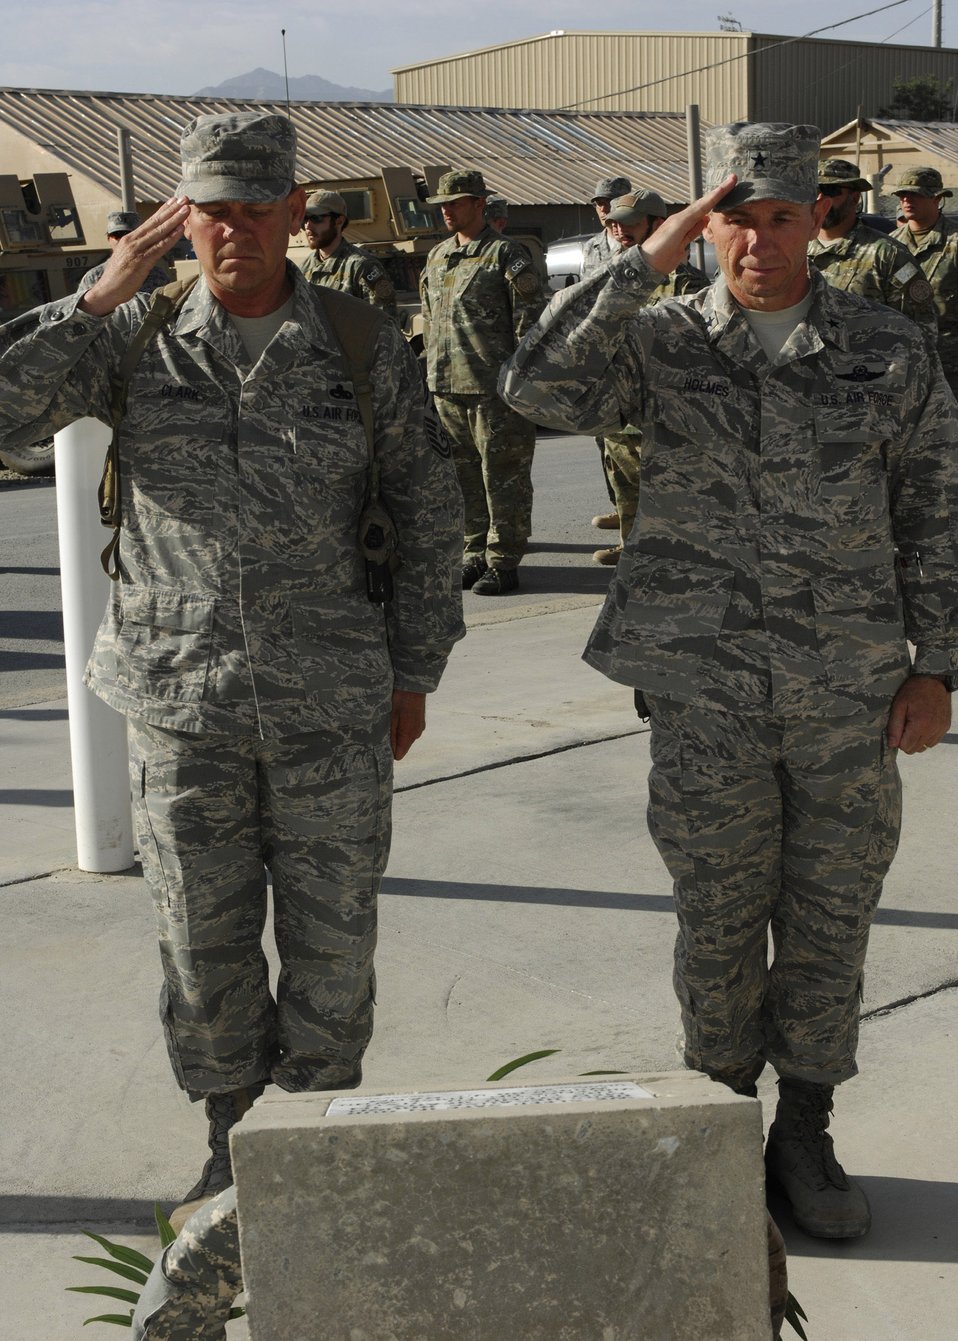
455 AEW holds memorial vigil

Brig. Gen. Mike Holmes and Command Chief Master Sgt. Ray Clark pay tribute to those who have given the ultimate sacrifice by saluting the wreath laid in their honor during the wing?s memorial ceremony at Bagram Air Base, Afganhistan, May 26. General Holmes is the 455th Air Expeditionary Wing commander. Sergeant Clark is the 455th AEW command chief.